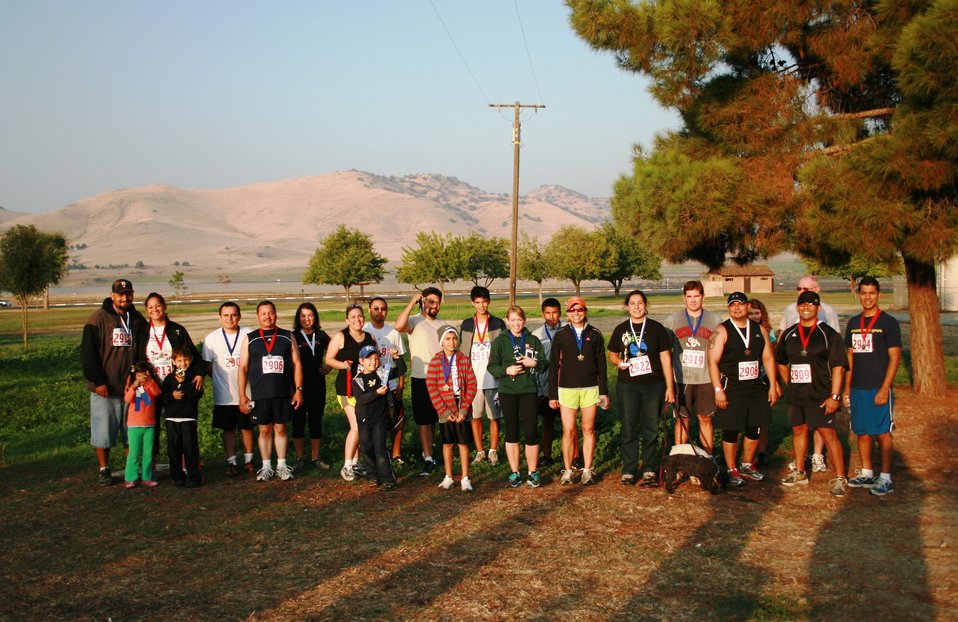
First-ever Fall Fitness Day held at Success Lake

The 28 participants in Fall Fitness Day at Success Lake in Porterville, Calif., pose for a group photo Oct. 22, 2011. The first-ever event, hosted by the City of Porterville Parks and Leisure Department and the U.S. Army Corps of Engineers Sacramento District, supports President Barack Obama’s America’s Great Outdoors initiative to re-connect Americans with the outdoors. Activities included a 5-kilometer run and walk and a fun run for kids.